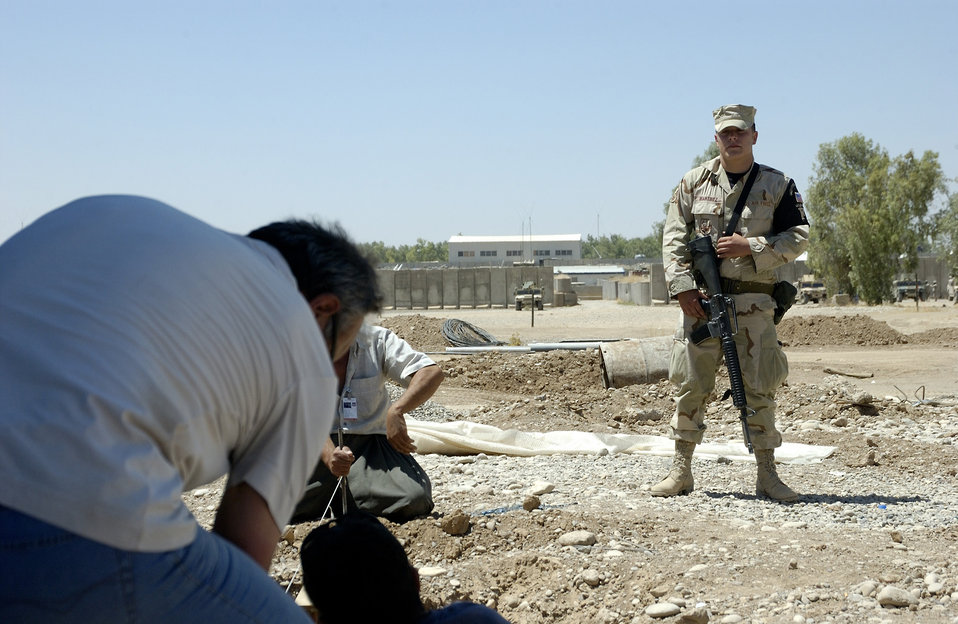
Airmen defend inside the wire

KIRKUK AIR BASE, Iraq -- Senior Airman Donnie Martinez monitors third-country nationals as they construct a building here. Hundreds of local employees work on the base daily under the watchful eye of escorts. Airman Martinez is deployed from Lackland Air Force Base, Texas.